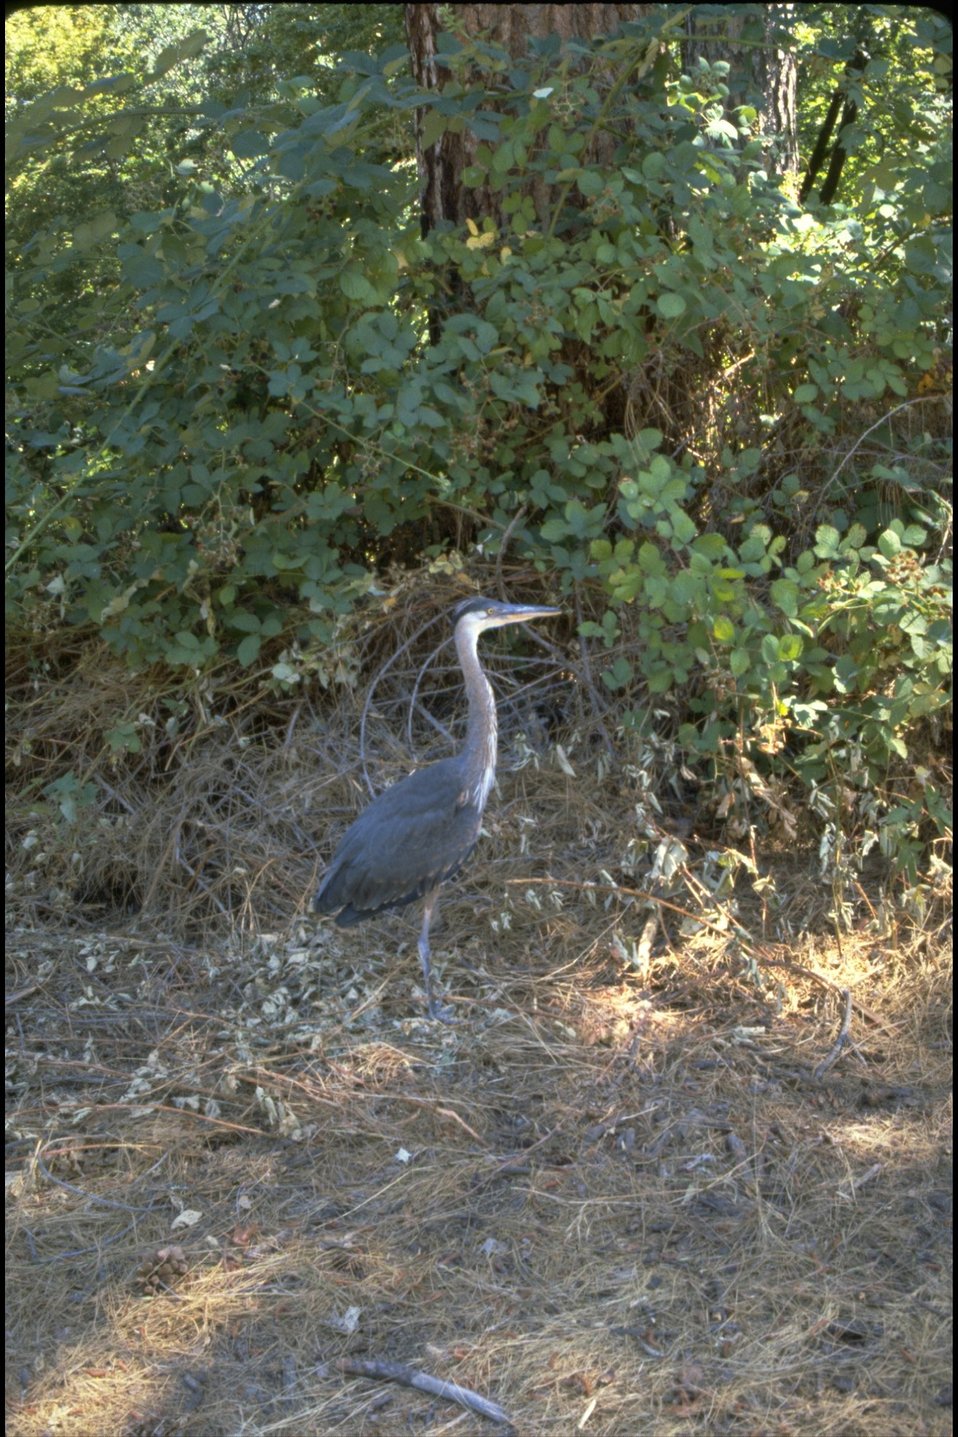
Rogue River - Great Blue Heron.